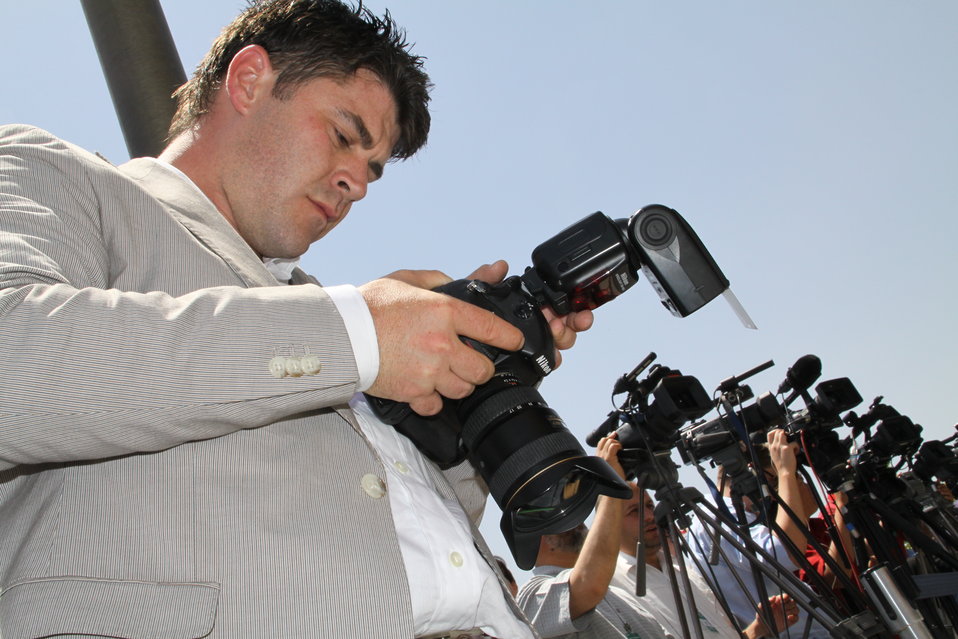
Kabul Official July 4th Celebration